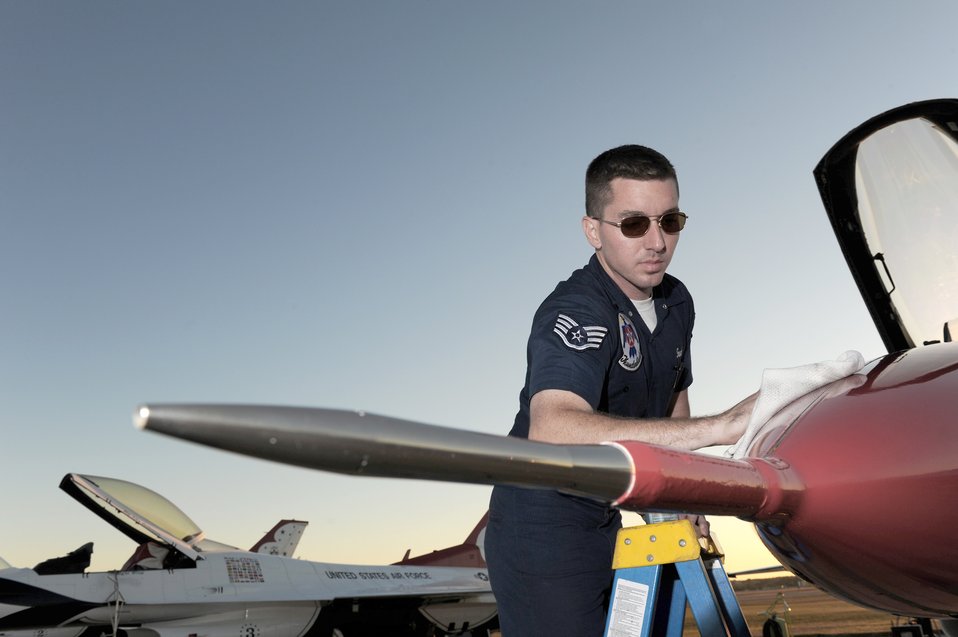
Thunderbirds at Lackland

Following the Thunderbirds aerial demonstration at the AirFest 2010, Staff Sgt. Zachary French wipes down his jet Nov. 7, 2010, at Lackland Air Force Base, Texas. Sergeant French is a Thunderbird crew chief.